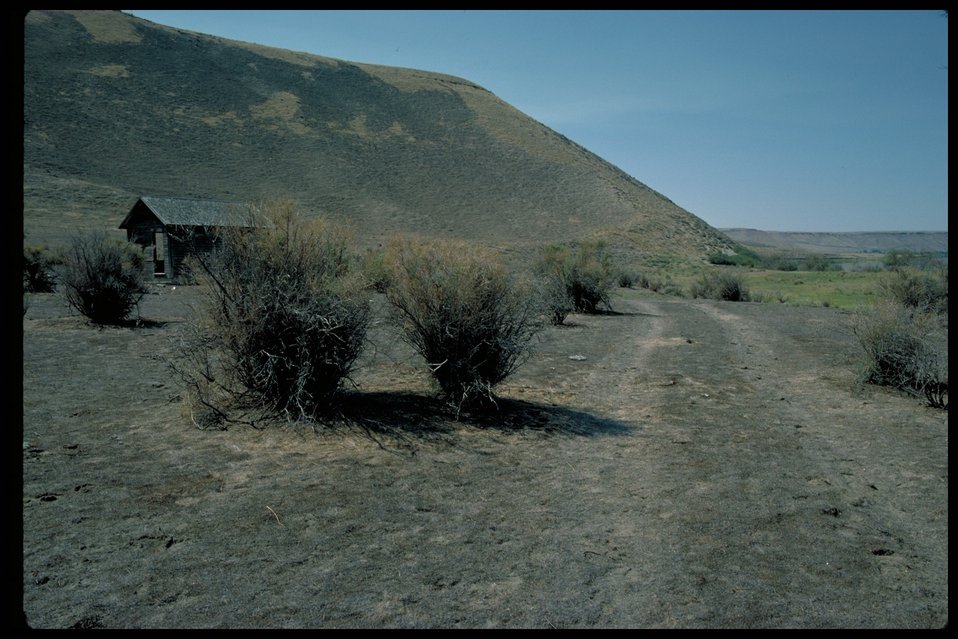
Oregon Trail SE of Hammett Lower Snake River District